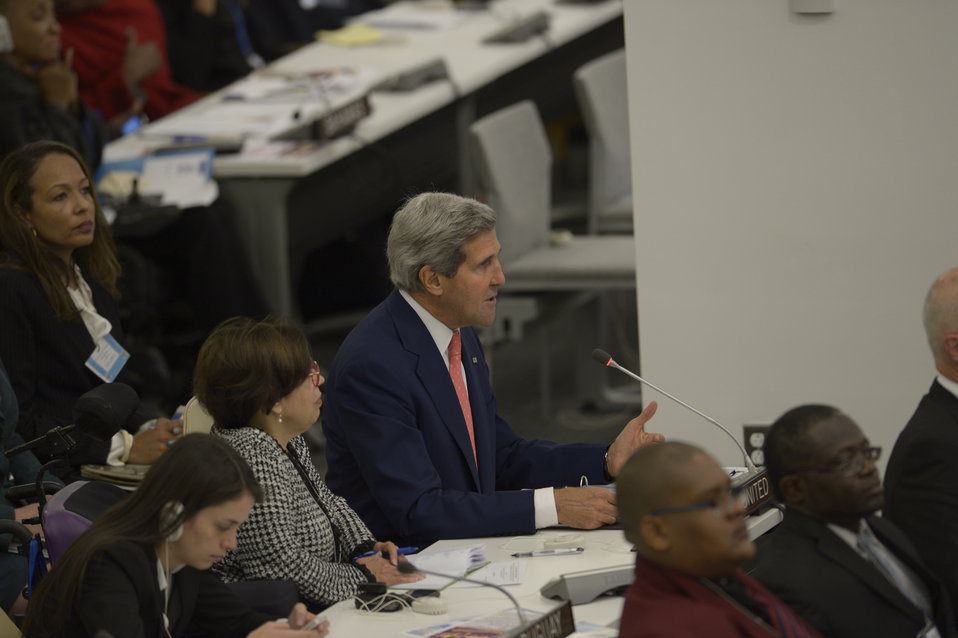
Secretary Kerry Participates in a Meeting on Disability and Development

U.S. Secretary of State John Kerry participates in a high level meeting of the United Nations General Assembly on disability and development at the United Nations in New York City on September 23, 2013.